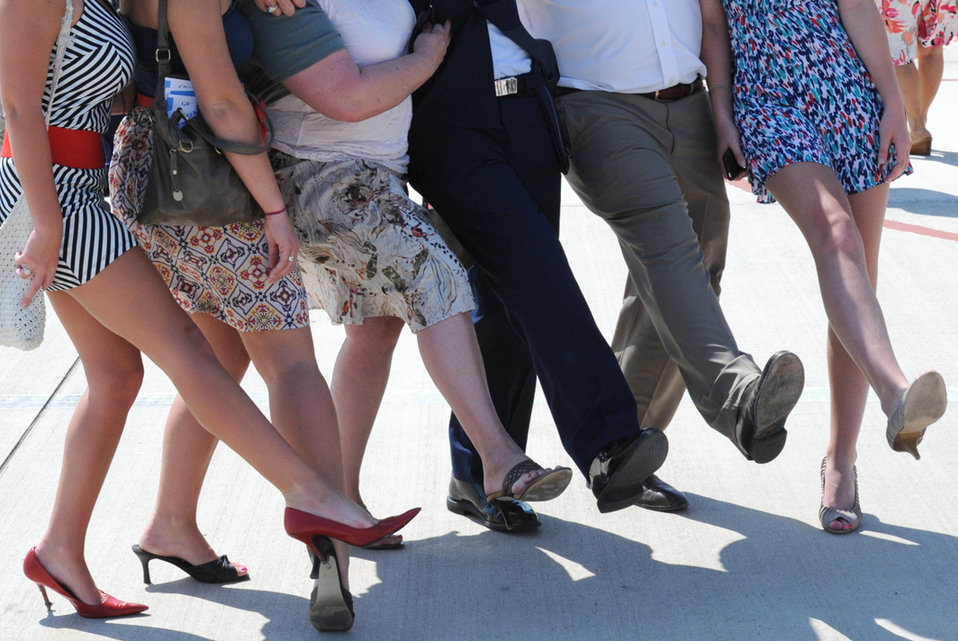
Amputee earns his wings

First Lt. Ryan McGuire and his family put their best foot forward May 20, 2011, at Laughlin Air Force Base, Texas, after the lieutenant's graduation from Specialized Undergraduate Pilot Training. Lieutenant McGuire became the first person to graduate Air Force pilot training as an amputee. He is assigned to the 47th Operation Support Squadron.